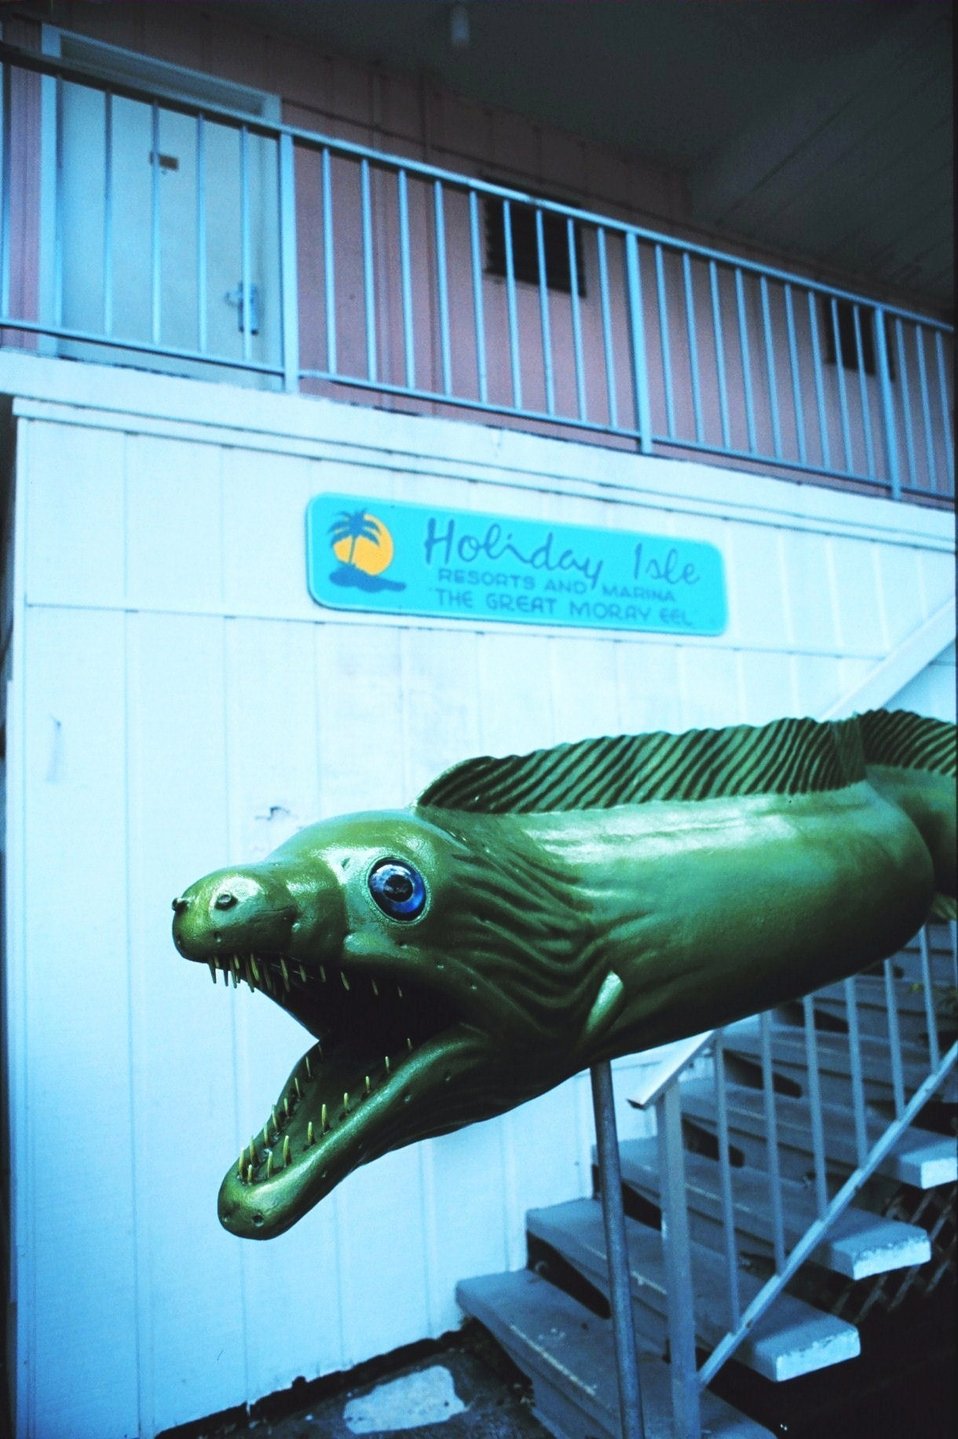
Fish art